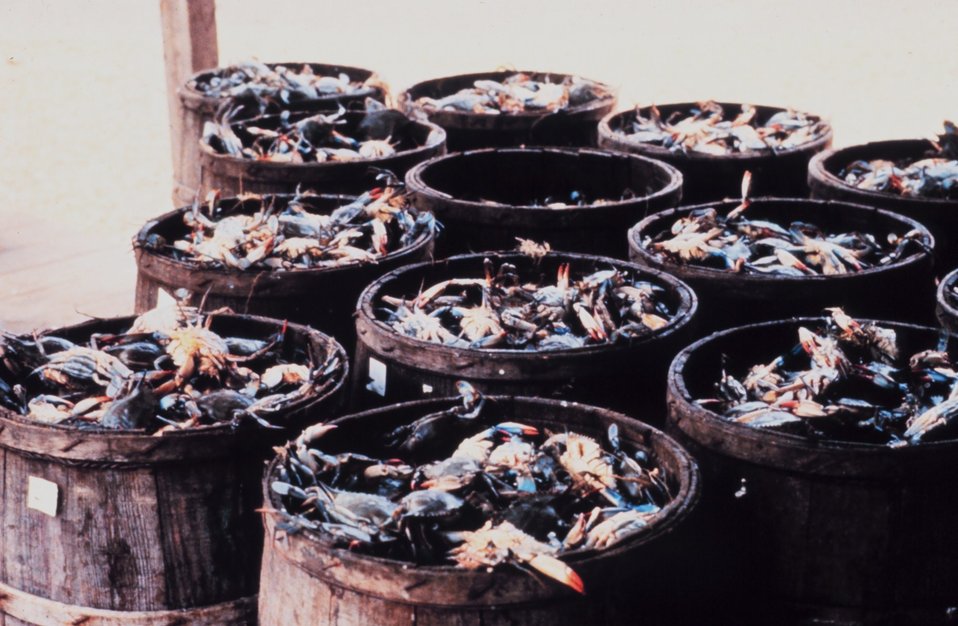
The bounty of the Chesapeake -barrels of blue crab - Callinectes sapidus.